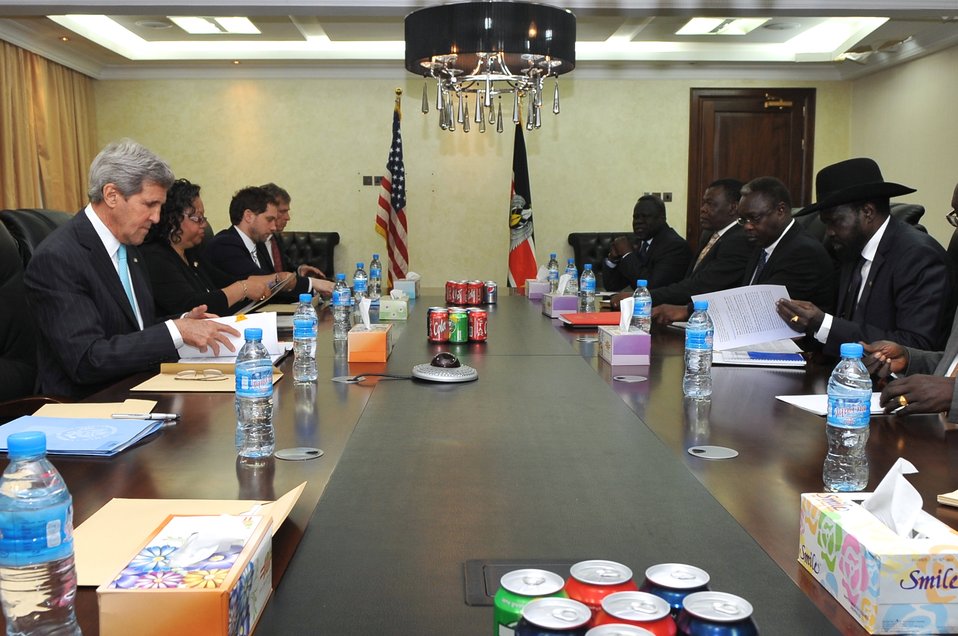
Secretary Kerry, South Sudanese President Kiir Prepare for Meeting in Juba

U.S. Secretary of State John Kerry and South Sudanese President Salva Kiir Mayardit look over their respective notes at the outset of a meeting in Juba on May 2, 2014.